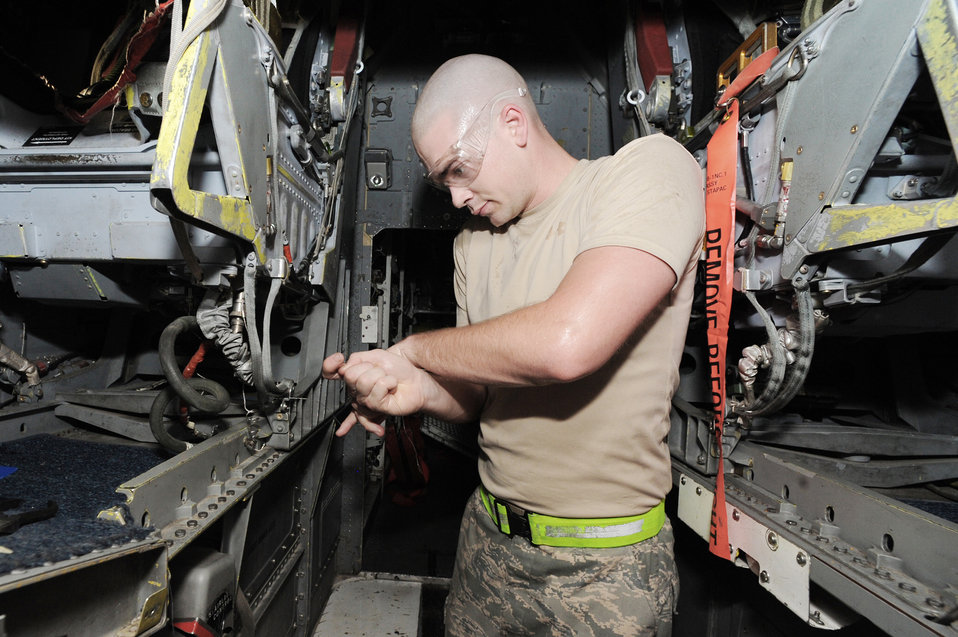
Keeping it in place

Airman 1st Class Timothy Milders, an aircrew egress systems technician, replaces a restraint safety wire on an aircraft ejection seat April 5, 2010, at an air base in Southwest Asia. He is with the 379th Expeditionary Maintenance Squadron.